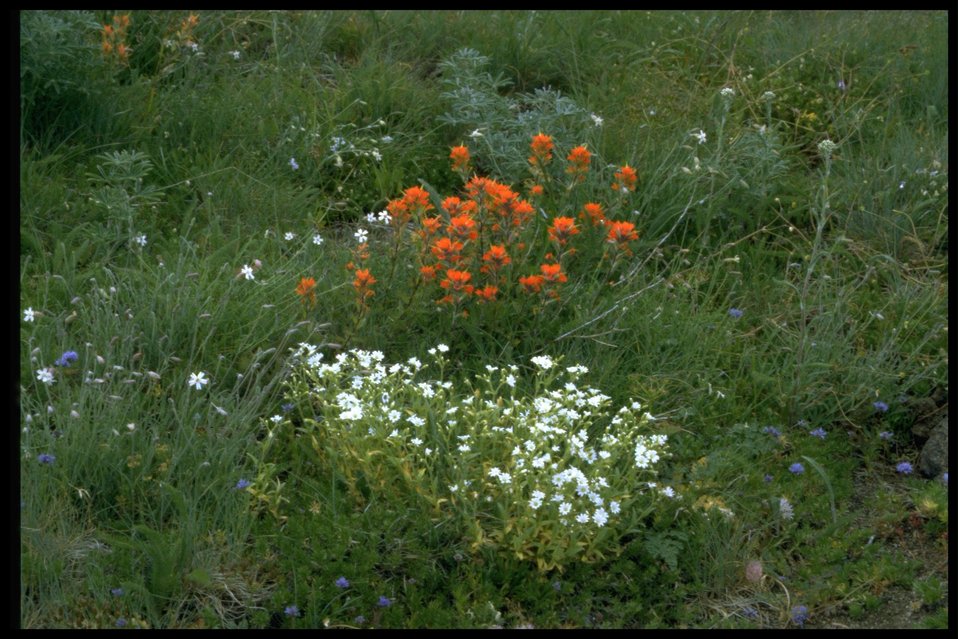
Farshot of wildflowers (genus Castilleja).